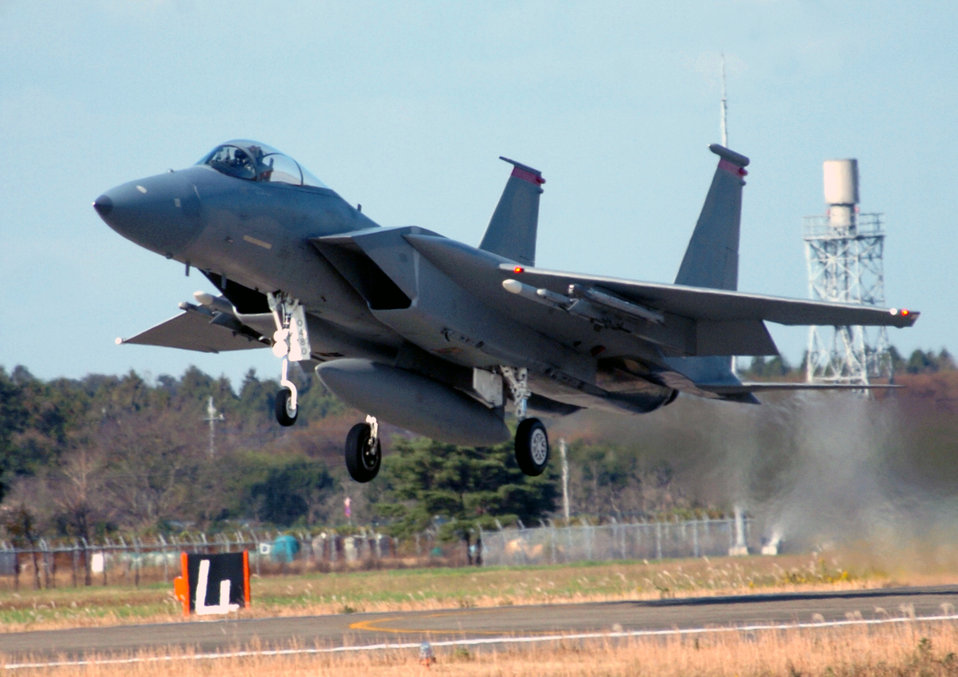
So long Sword

HYAKURI AIR BASE, Japan -- An F-15 Eagle takes off for a mission during exercise Keen Sword 2005. The exercise, which ended Nov. 19, is designed to further increase the defensive readiness of Japanese and American forces through training in air, ground and sea operations, and to improve interoperability between the countries. The aircraft is assigned to the 67th Fighter Squadron at Kadena Air Base, Japan.